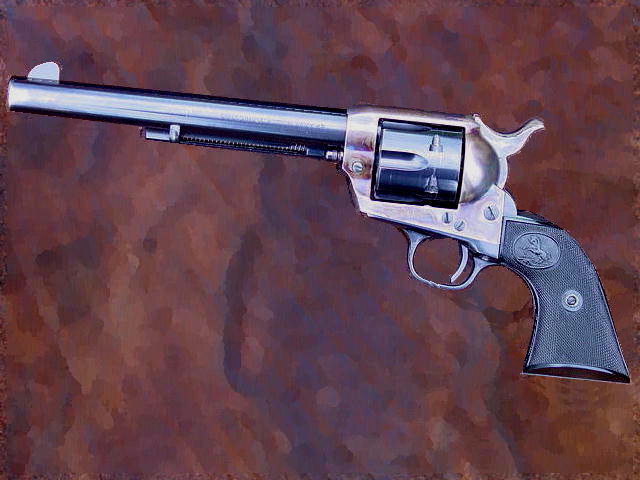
Second generation Colt Single Action Army